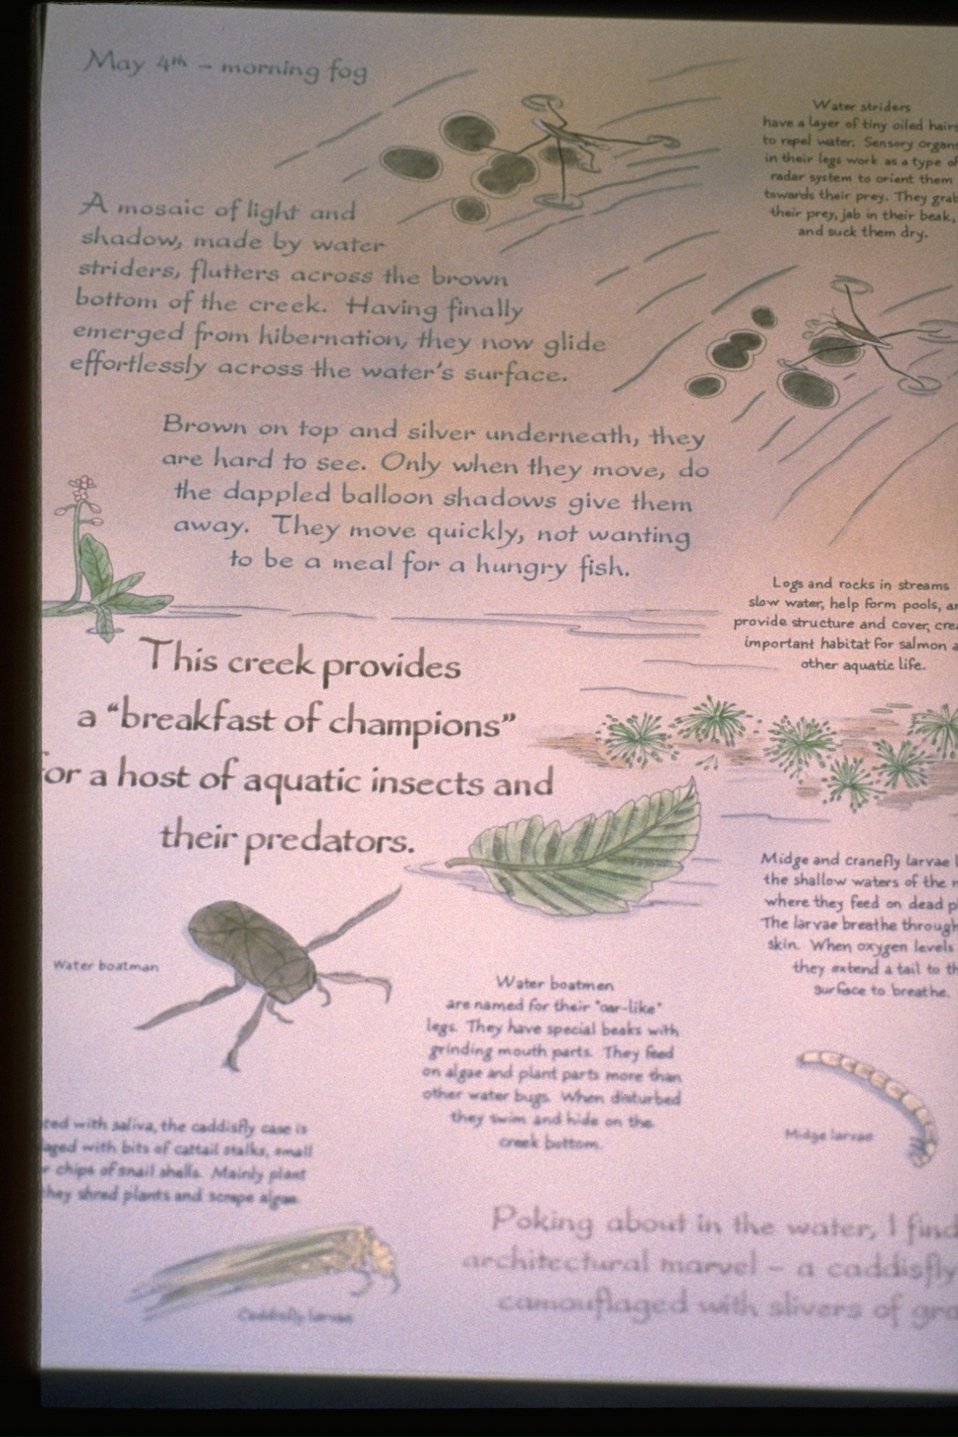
Interpretive Panels: Boardwalk Trail Journals.